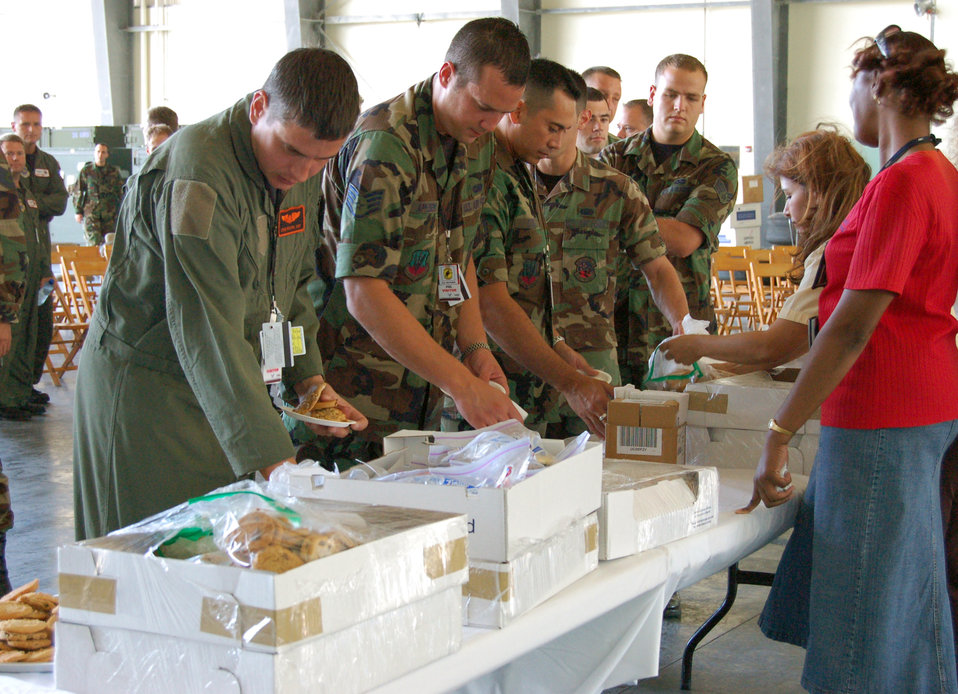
CMSAF visits Southern Command Airmen

Airmen and civilian workers get their share of holiday cookies Dec. 14 at Forward Operating Location Curacao, Netherlands Antilles. The cookies were part of batch of 12,000 donated for the 12th Air Force-sponsored